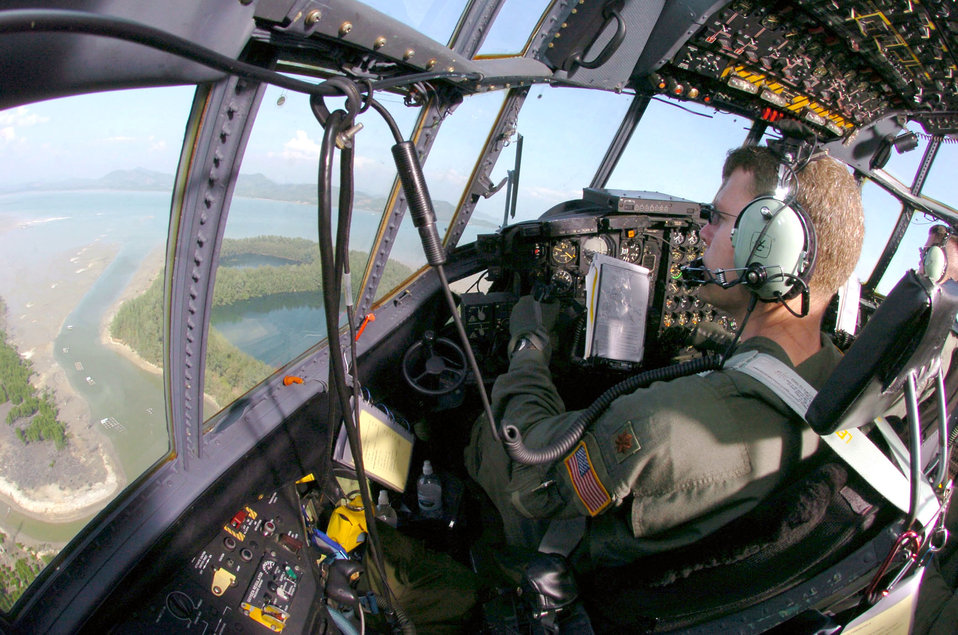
Yokota C-130s continue to fly aid to tsunami victims

PHUKET, Thailand -- Maj. Brian Geronime takes off in a C-130 Hercules after transporting an engineering assessment team here Jan. 8. He is a pilot assigned to the 36th Airlift Squadron at Yokota Air Base, Japan. The squadron first delivered relief supplies and equipment to devastated areas in Thailand, Indonesia and Sri Lanka, on Dec. 29.